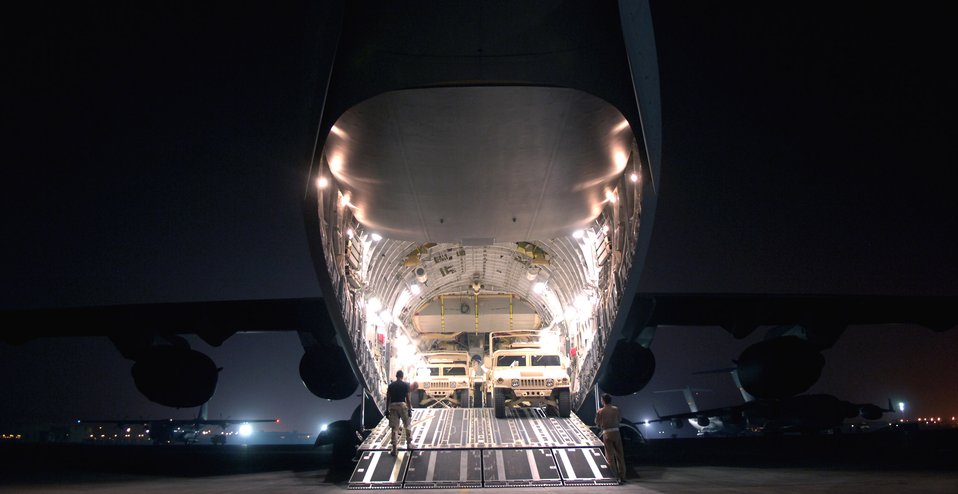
Globemaster operations

A C-17 Globemaster III is loaded with cargo at a forward operating base in Southwest Asia on Aug. 5. The C-17 is with the 816th Expeditionary Airlift Squadron. The squadron flew more than 1,200 sorties in July, delivering cargo and troops in support of operations Iraqi Freedom and Enduring Freedom.